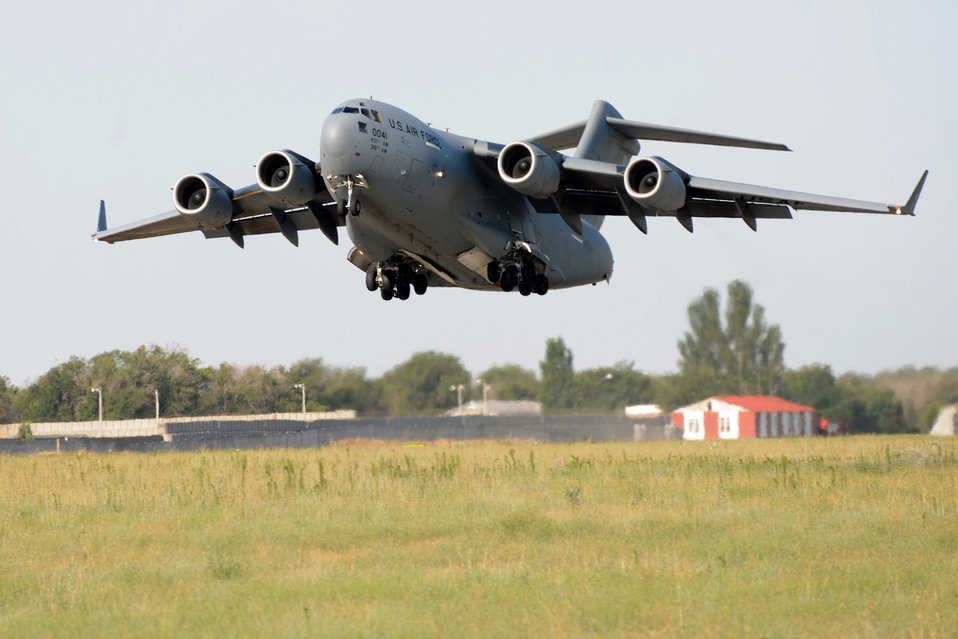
On my way

A C-17 Globemaster III takes off for Bagram Airfield, Afghanistan, July 29, 2010, from the Transit Center at Manas, Kyrgyzstan.